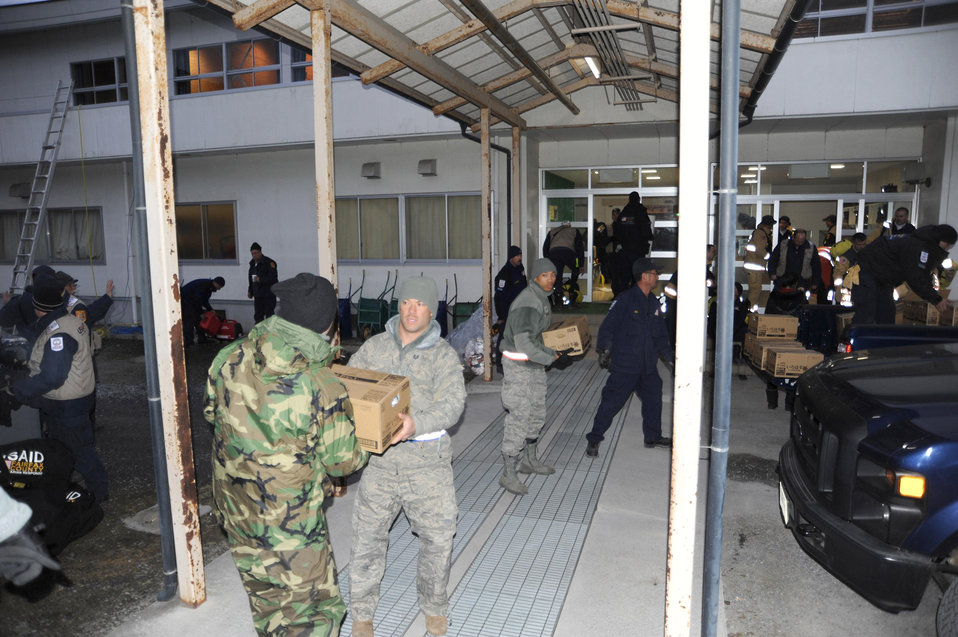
Search-and-Rescue Workers Arrive in Ofunato

Airmen from the Misawa based 35th Fighter Wing assist search and rescue team members in unloading supplies at Ofunato, Japan. 35th FW service members provided logistical and transportation support to U.S. and United Kingdom-based search and rescue teams. Teams from the United States, United Kingdom and China arrived at the tsunami-ravaged city to assist in searching for missing residents. A 9.0 magnitude earthquake triggered this destructive tsunami that impacted Japan's eastern coastline.